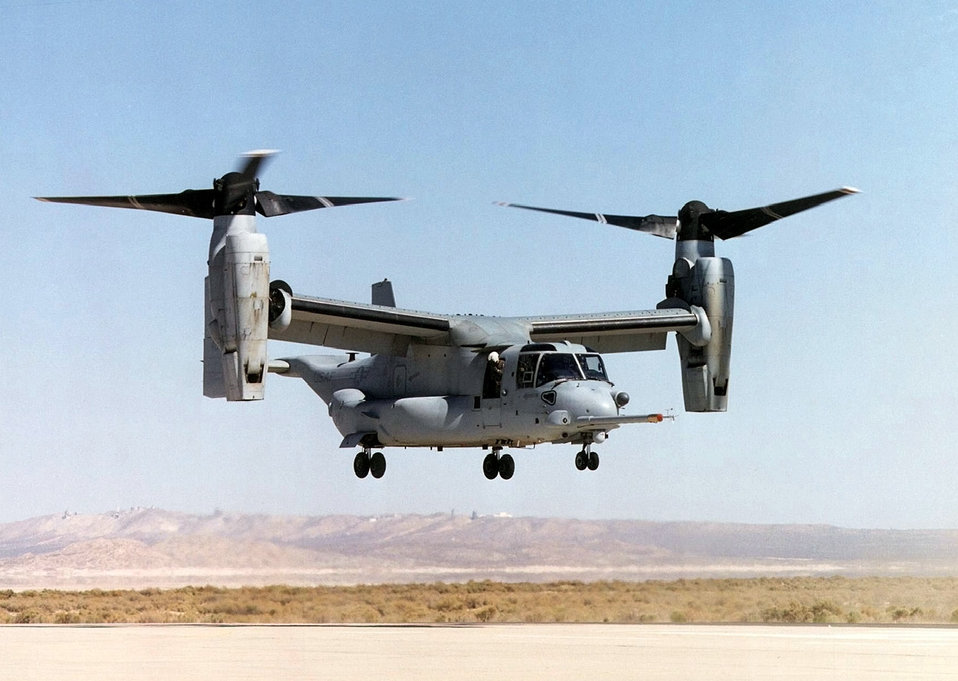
CV-22

FILE PHOTO -- Futuristic in its design, the CV-22 Osprey looks like a helicopter on the ground with two sets of propeller rotors on each wing tip. Once airborne, the rotors tilt forward so the aircraft resembles a dragonfly with turboprops.